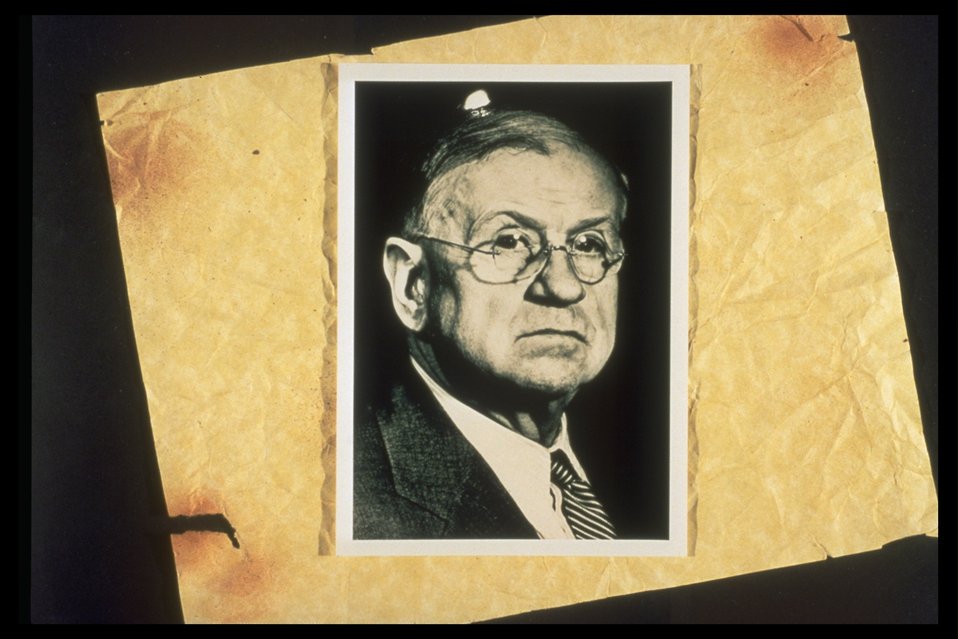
Unsure on identity, possibly, a historical state director for the BLM.